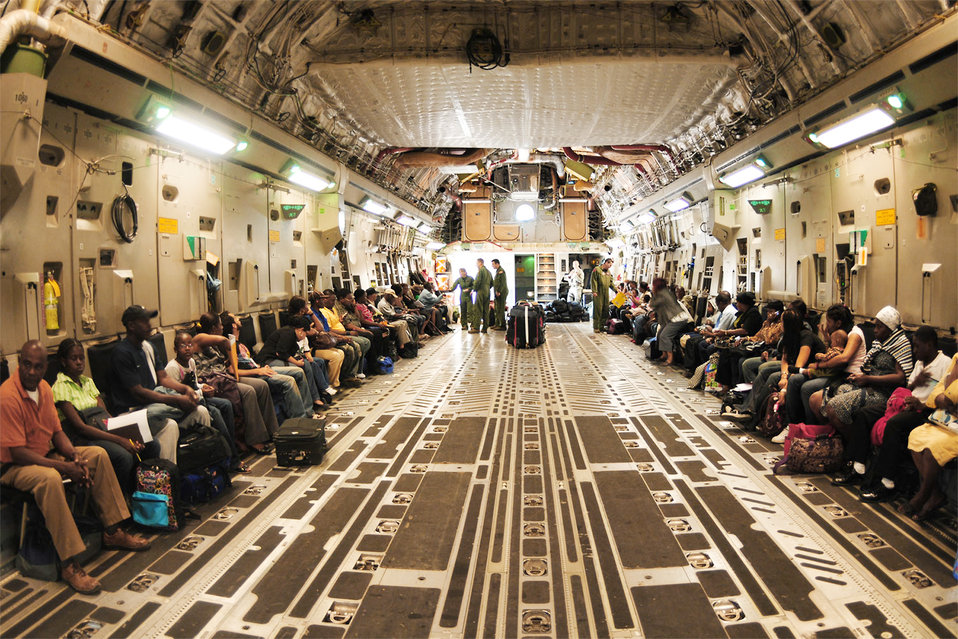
Delivering hope, relief

C-17 Globemaster III crew members help 54 Haitian evacuees get ready for takeoff from the Toussaint L'Ouverture International Airport in Port au Prince, Haiti, Jan. 18, 2010. After the from Altus Air Force Base, Okla., C-17 offloaded all of its cargo at the airport, the earthquake victims were transported to the Orlando International Airport in Orlando, Fla., to meet connecting flights.